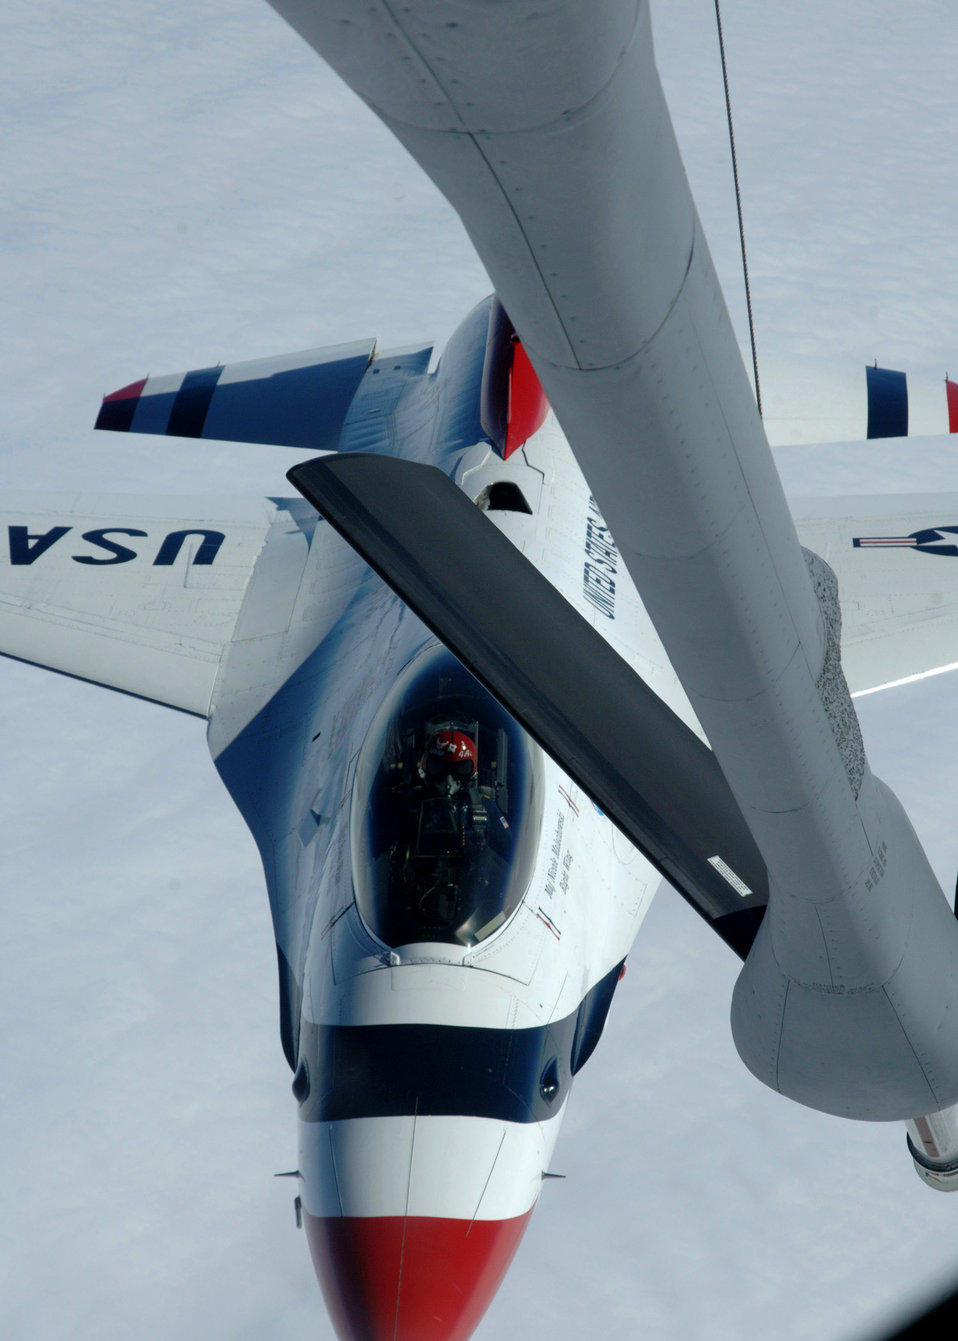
Refueling Thunderbirds

An Air Force Thunderbirds pilot pulls away after taking on fuel from a KC-135 Stratotanker Oct. 1 over the Midwest during a refueling mission. The Thunderbirds are the Air Force's premier demonstration squadron. The F-16 Fighting Falcon team represents the Air Force throughout the nation and abroad. The KC-135 is assigned to the 319th Air Refueling Wing tanker from Grand Forks Air Force Base, N.D.